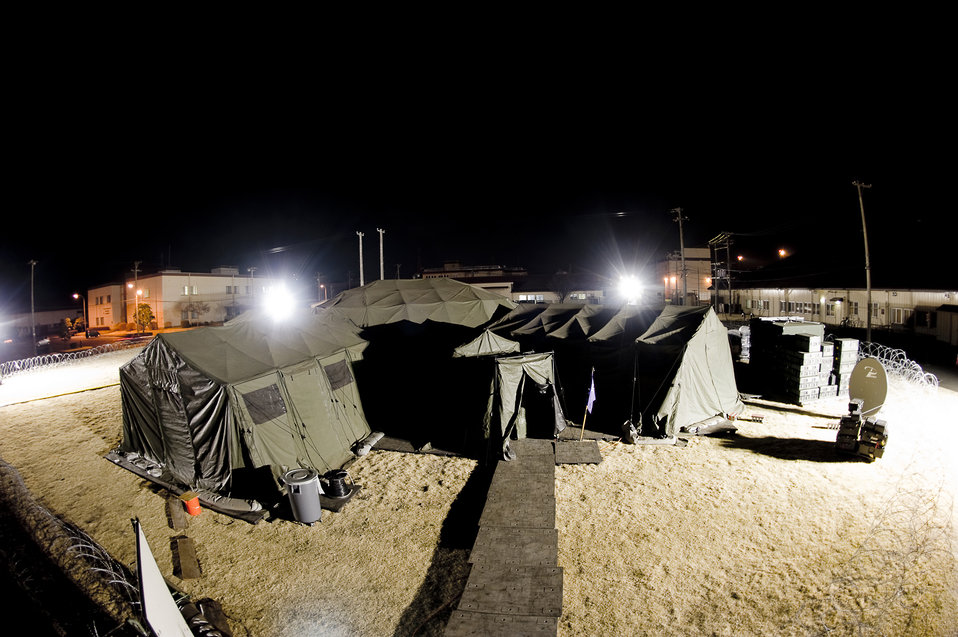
DJC2 system provides communications support for JSF, USFJ

The Deployable Joint Command and Control System is currently deployed to Yokota Air Base, Japan, to provide communications in support of Operation Tomodachi.